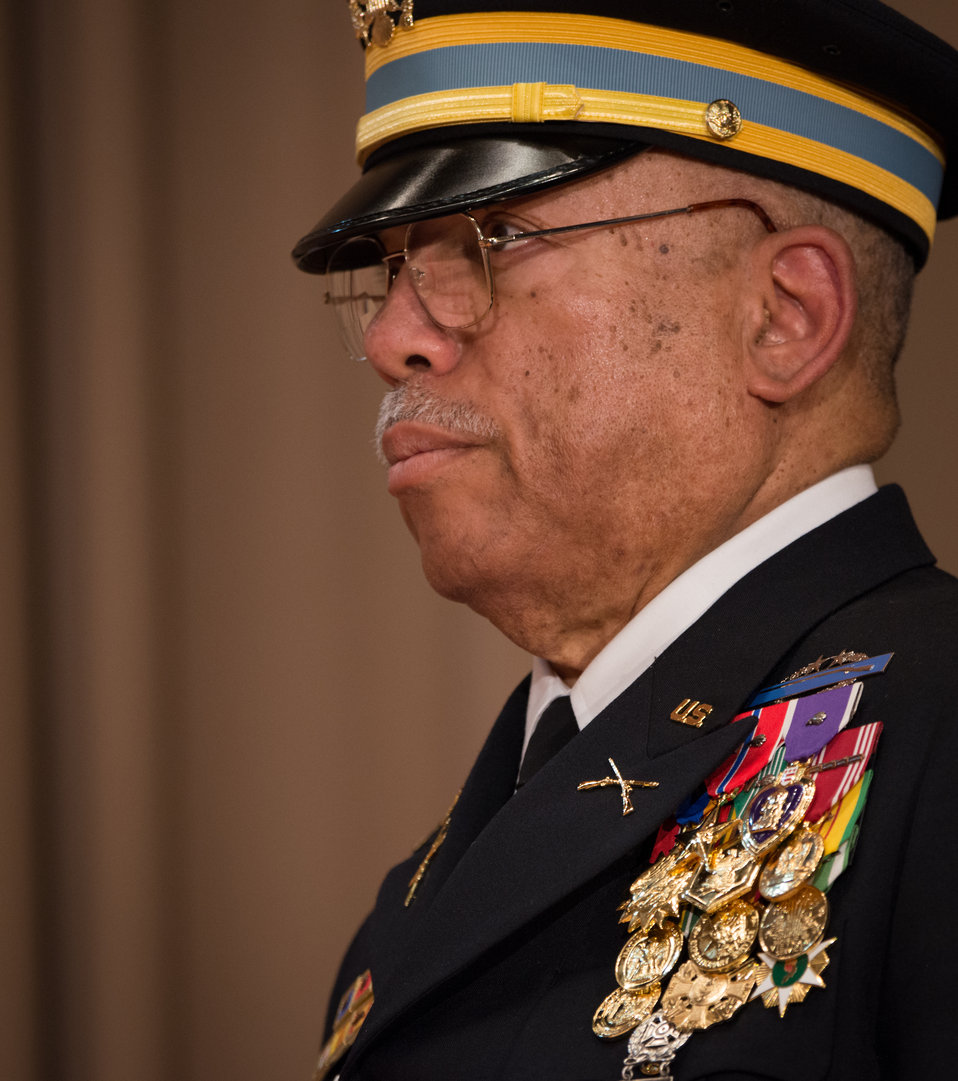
U.S. Department of Agriculture (USDA) Farm Services Agency (FSA) Office of Civil Rights U.S. Army Captain (retired) and Vietnam veteran Andrew Malloy conducts the Prisoner of War (POW)/Missing in Action (MIA) Honors Ceremony, during the 2013 U.S. Department of Agriculture (USDA) Veterans’ Day Observance, whose theme is “VALOR, COURAGE, SACRIFICE – HONORING ALL WHO SERVED,” in Washington, DC, on Wednesday, November 20, 2013.